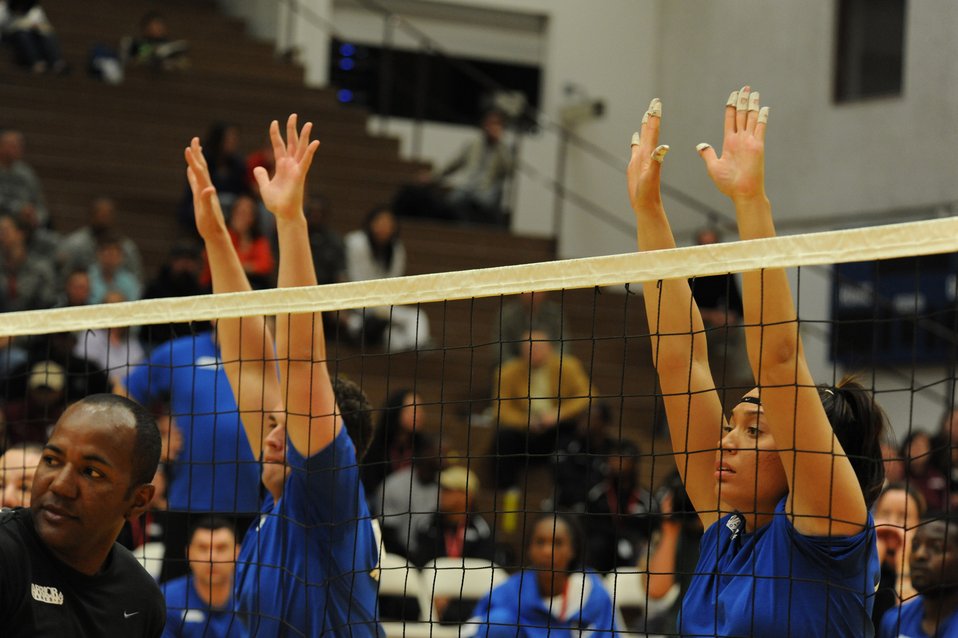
AF Volleyball wins Bronze at Warrior Games

Air Force Warrior Games athletes prepare to block the ball during the Warrior Games sitting volleyball match against Army at the U.S. Olympic Training Center in Colorado Springs, Colo., May 13, 2010.